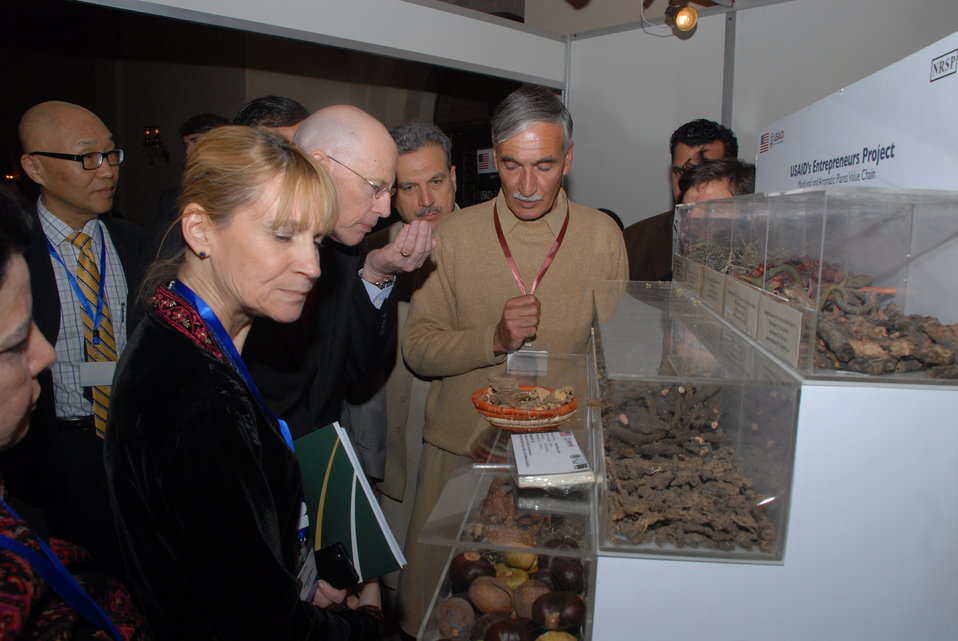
The United States Helps Revitalize Medicinal Plants and Honey Industry in Khyber Pakhtunkhwa 01

The United States, through the U.S. Agency for International Development’s (USAID) Entrepreneurs Project, has trained 24,000 small business owners in the field of medicinal plants and honey. The Medicinal and Aromatic Plants and Honey Industry conference on February 3 featured discussions aimed at developing the medicinal plant and honey sector in Pakistan. Plant collectors and bee-keepers discussed business opportunities with buyers and service providers.